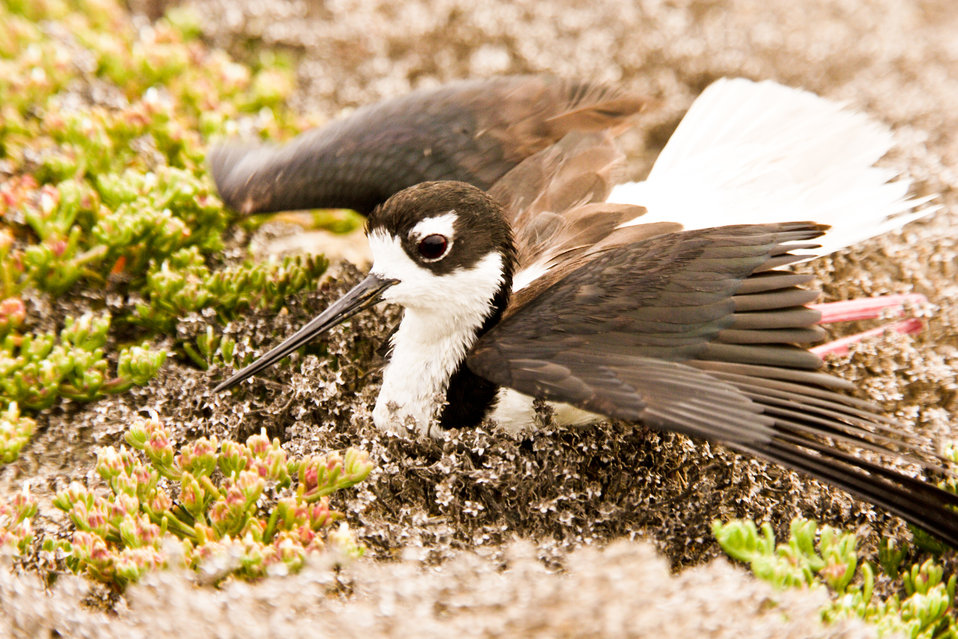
Black-necked stilt exhibiting a 'broken wing' display

In order to ward off predators and distract them from the location of their young, stilts (among many other shorebirds such as Killdeer, plovers, and american avocets) display a behavior that draws attention of a possible predator away by flapping their wings on the ground. This display resembles a weak or sick bird, that would be easier prey for the predator catch.